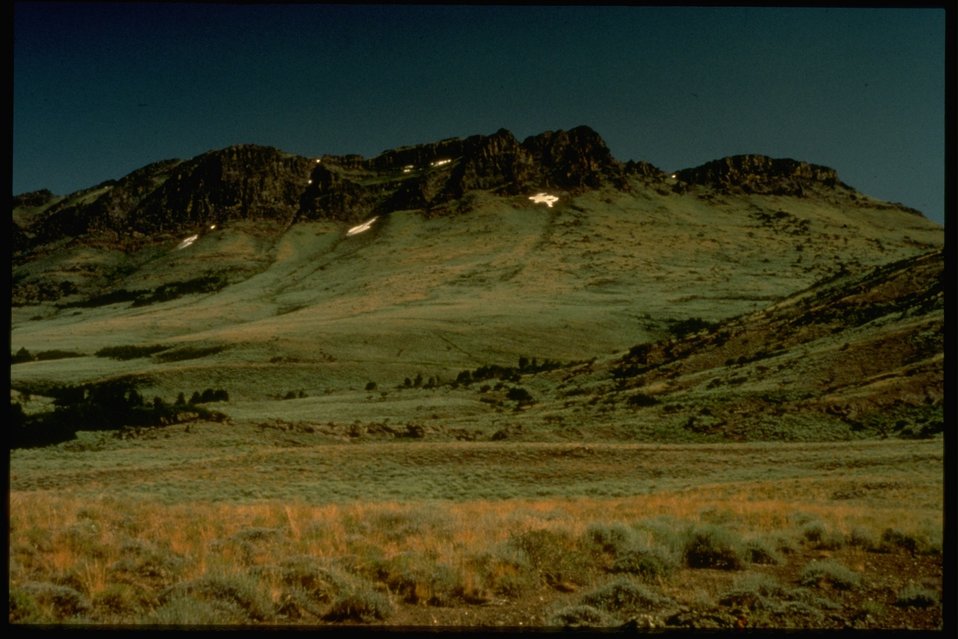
Oregon Canyon. OR 3-157